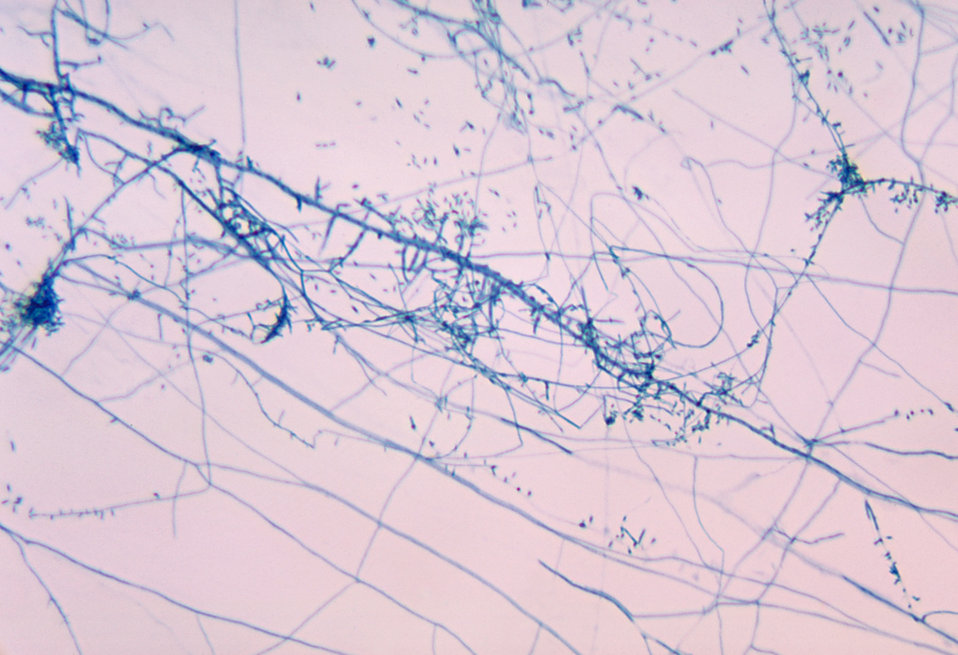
This is a photomicrograph of the fungus Trichophyton mentagrophytes.